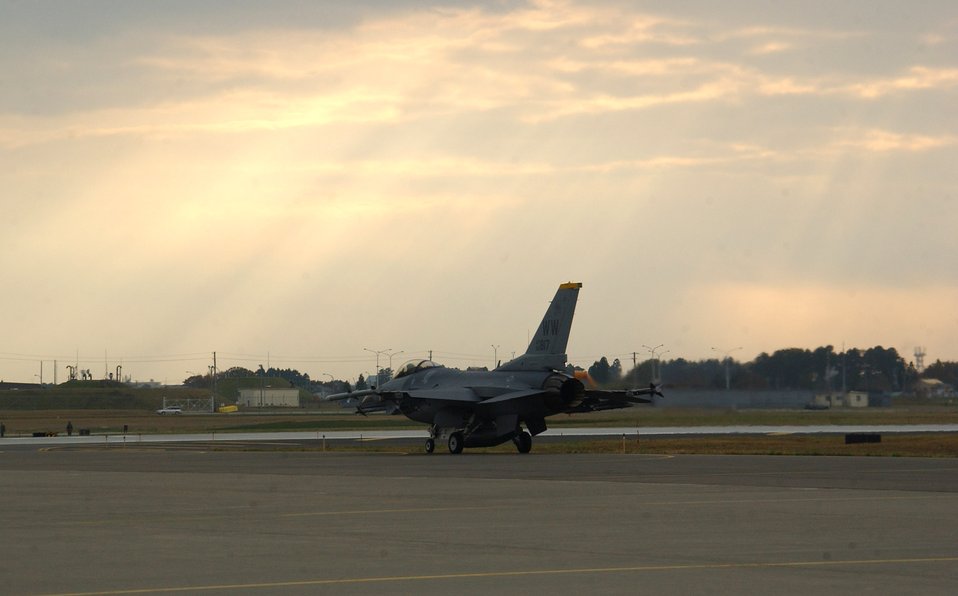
Pilots focus on air superiority, operations during Keen Sword

Capt. James Smith taxis his F-16 Fighting Falcon onto the runway in preparation for take-off during Eercise Keen Sword Nov. 14 at Misawa Air Base, Japan. The two-week Pacific exercise began Nov. 6. Captain Smith is with the 14th Fighter Squadron.